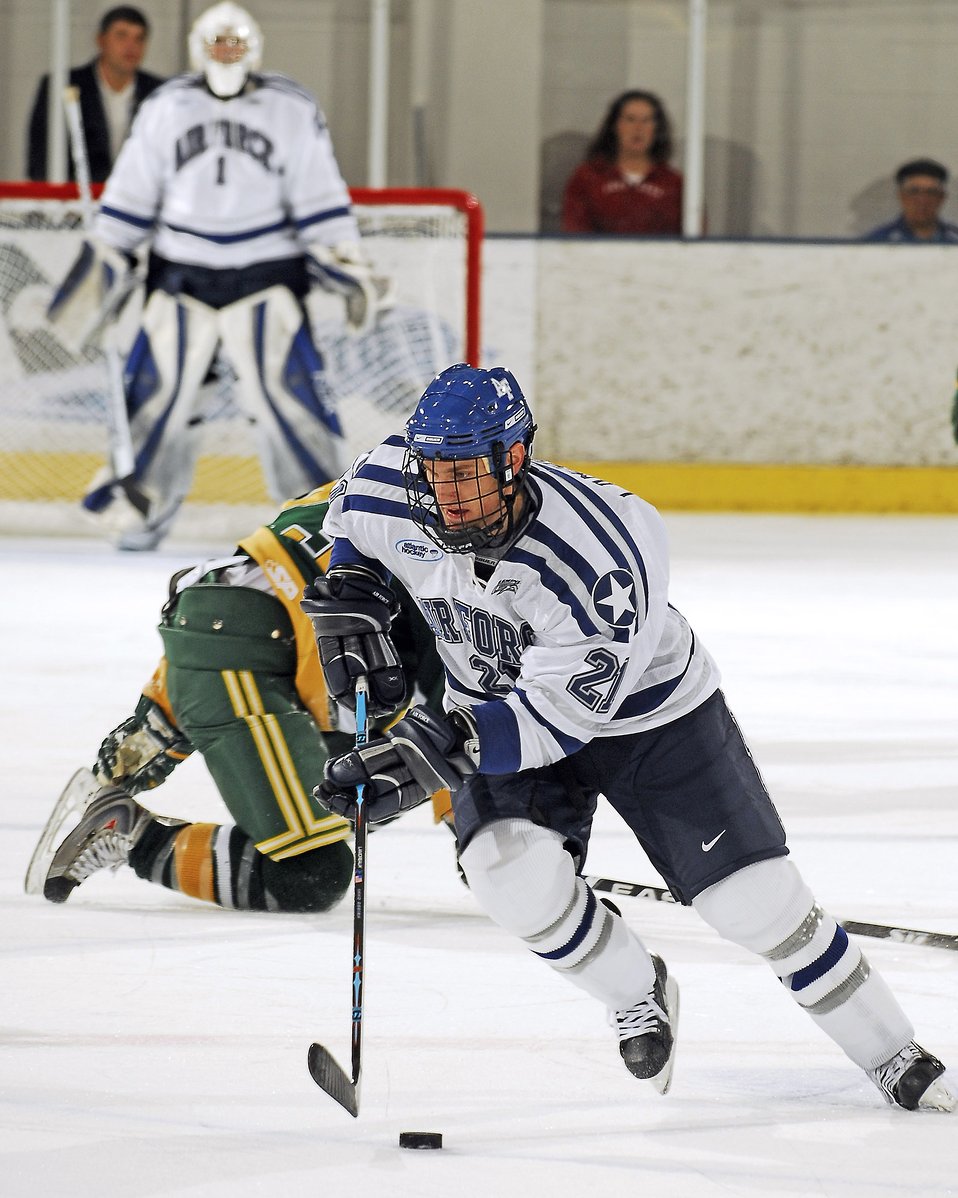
Going for a power play

During an exhibition hockey game Oct 5, U.S. Air Force Academy sophomore forward Jacques Lamoureux grabs the puck at the Academy's Cadet Ice Arena in Colorado. The Falcons scored two power-play goals in the final 2:12 of the game, defeating the University of Alberta 3-1.